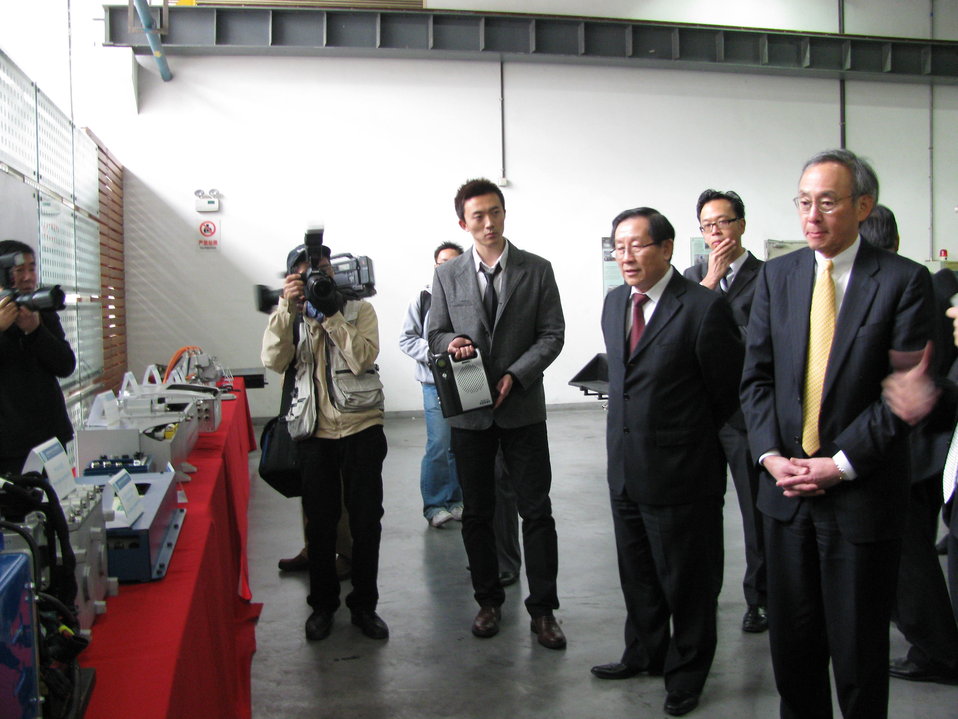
Shanghai 044